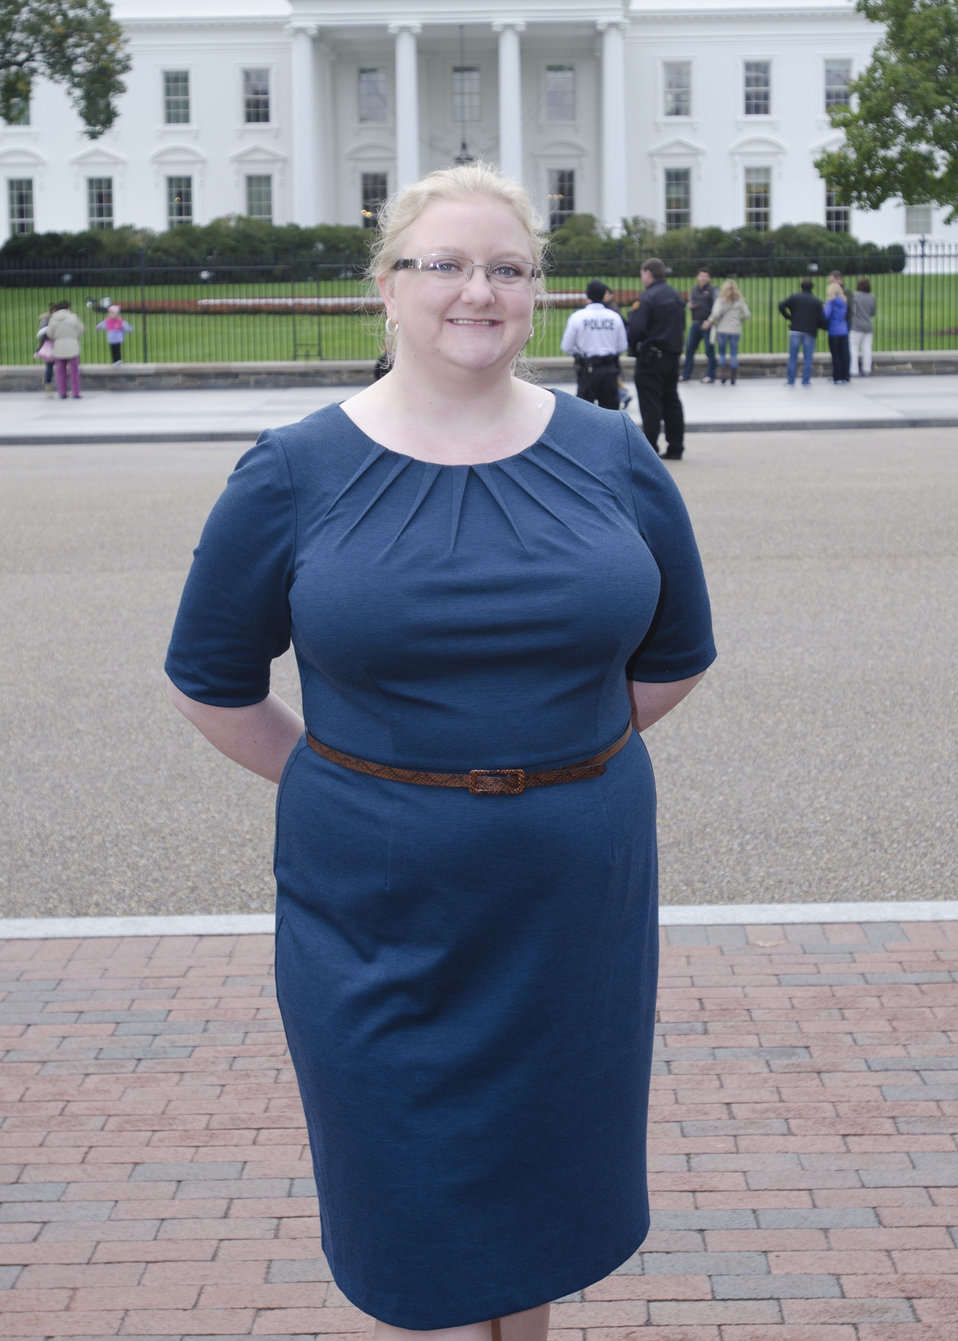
Champion of Change recipient Andrea Kneer-Rice in front of the White House in Washington, D.C. on Tuesday, Oct. 9, 2012. Andrea Kneer-Rice grew up in Frederick County, MD., and was a devoted 4-H and FFA member who traveled across the country with the Maryland state 4-H horse teams. She recently began working for University of Maryland Extension (UME) as a 4-H educator with a focus in Science, Technology, Engineering, and Mathmatics (STEM) education. In the short time that she has been with UME she has gained funding for 4-H clubs, helped implement the Baltimore City Youth Expo, and built partnerships with other key community groups such as the University of Maryland Biopark and the Boys and Girls Clubs of Metropolitan Baltimore.